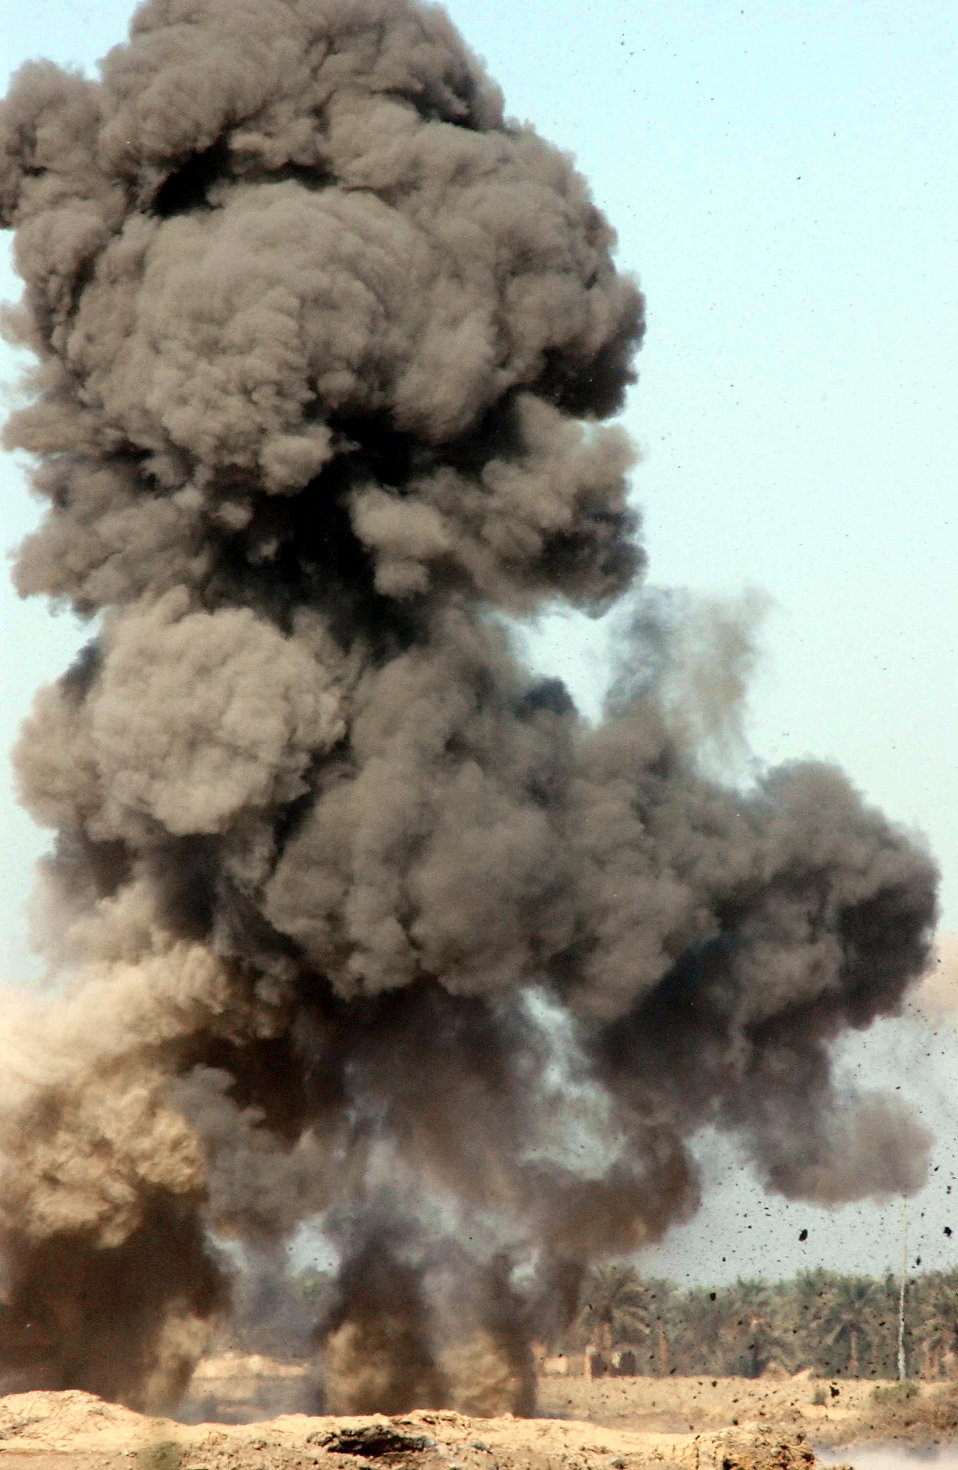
Iraqi Freedom

BAGHDAD INTERNATIONAL AIRPORT, Iraq -- A detonation of seized ordnance and disarmed explosive devices is executed by the 447th Expeditonary Civil Engineering Squadron explosive ordnance disposal technicians here Nov. 15.